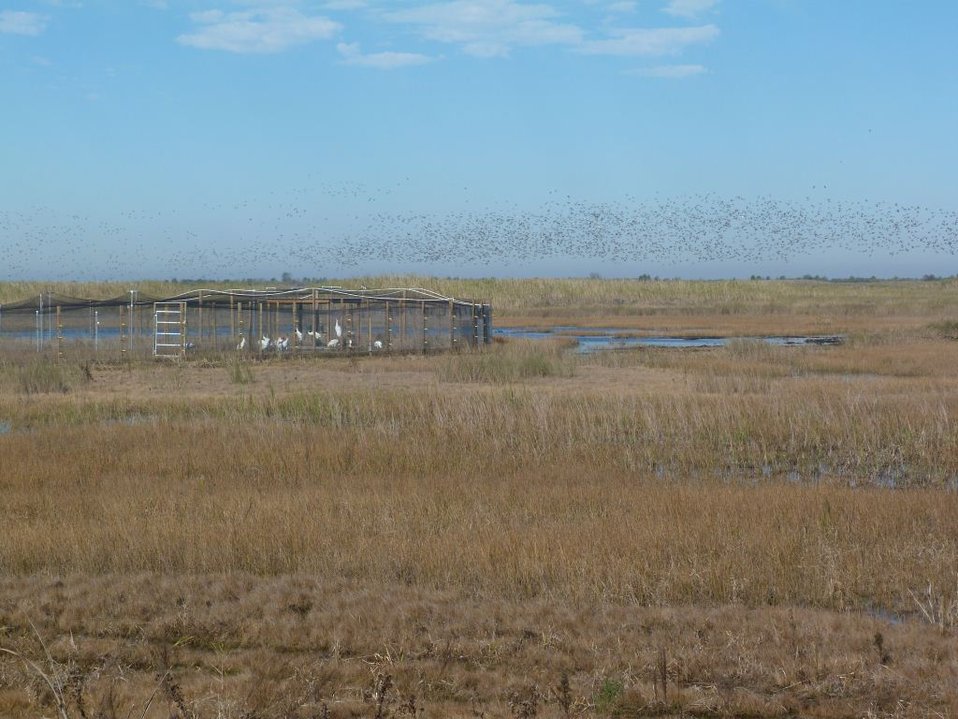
Whooping Crane Reintroduction Pen

Newly arrived 2011 cohort in the top-netted pen in the White Lake Wetlands Conservation Area (WLWCA) with a large flock of ducks and geese flying over the marsh in the background.